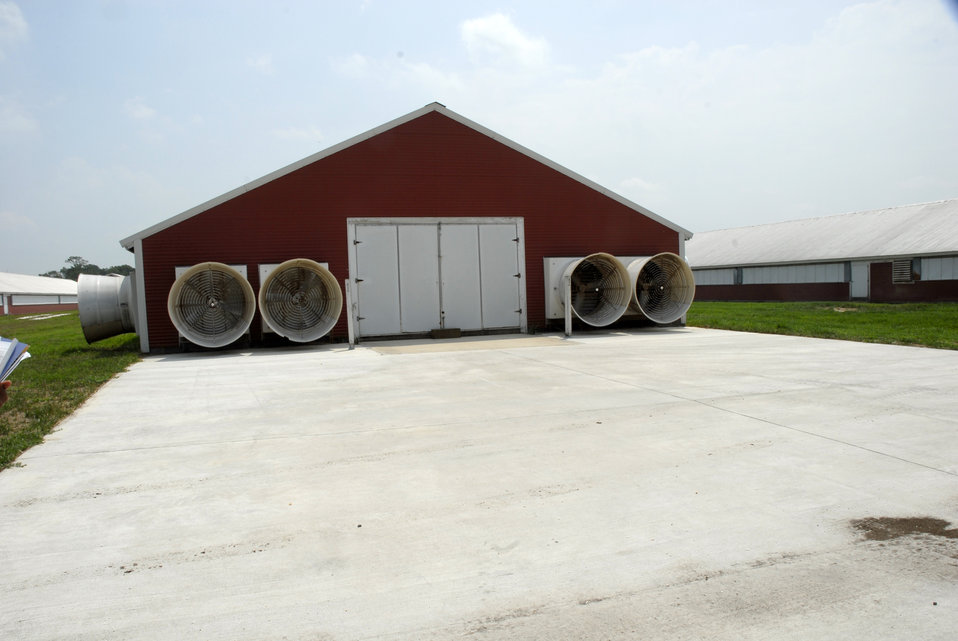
The U.S. Department of Agriculture (USDA) Natural Resources Conservation Service (NRCS) Environmental Quality Incentives Program (EQIP) enabled a Delaware chicken farmer to have concrete pads built outside of his chicken houses on July 8, 2008. The pads have made the farmer’s life easier by reducing the tracking of manure when shipping out poultry and cleanup is easier. EQIP provides technical and financial assistance to farmers to improve the soil, water, air, plants, animals, and related natural resources on their land. Beginning and limited resource producers are eligible to receive up to 90 percent cost-share assistance for conservation practices through EQIP.